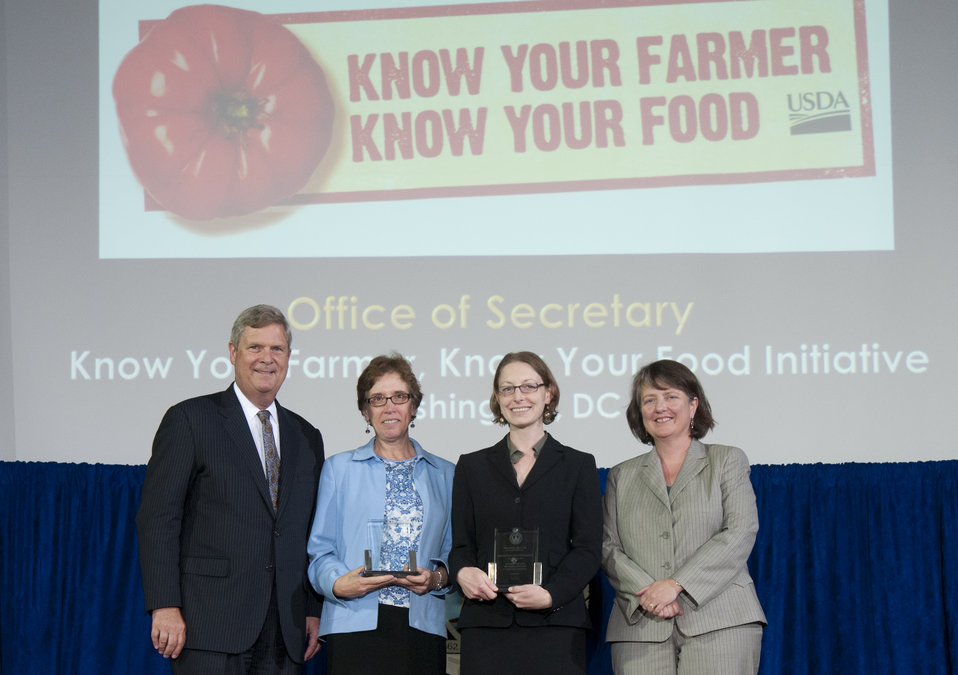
Agriculture Secretary Tom Vilsack and Agriculture Deputy Secretary Kathleen Merrigan present the Secretary’s Honor Award to Know Your Farmer, Know Your Food Initiative Office of the Secretary group leaders Jill S. Auburn and Elanor S. Starmer at the U.S. Department of Agriculture (USDA) 64th Annual Honor Awards Ceremony in Washington, D.C. on Wednesday, Sept. 12, 2012. The Know Your Farmer, Know Your Food Initiative Taskforce is an interagency effort that has strengthened and coordinated USDA support for regional food systems, developed innovative outreach tools, and created new opportunities in rural America.